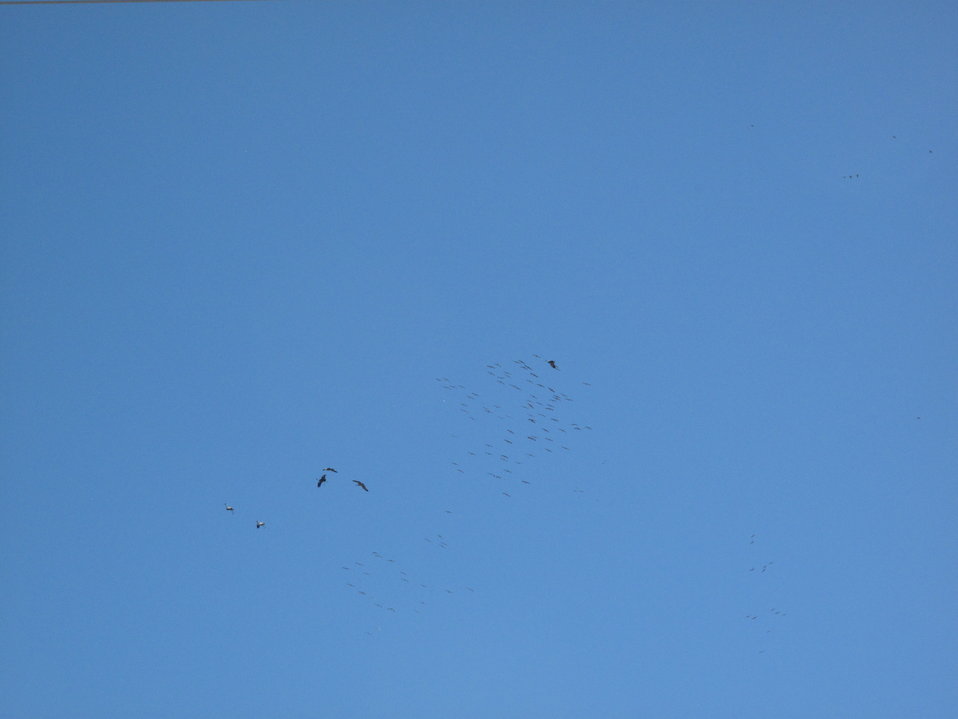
Cranes in Flight

The Monte Vista National Wildlife Refuge serves as a stopover point for cranes during their northward and southward migrations each year. The birds using the Refuge nest primarily in Montana, Idaho and Wyoming and spend winters in New Mexico, Arizona, and Mexico. However, some cranes that visit the Refuge may nest as far away as Alaska and western Siberia.